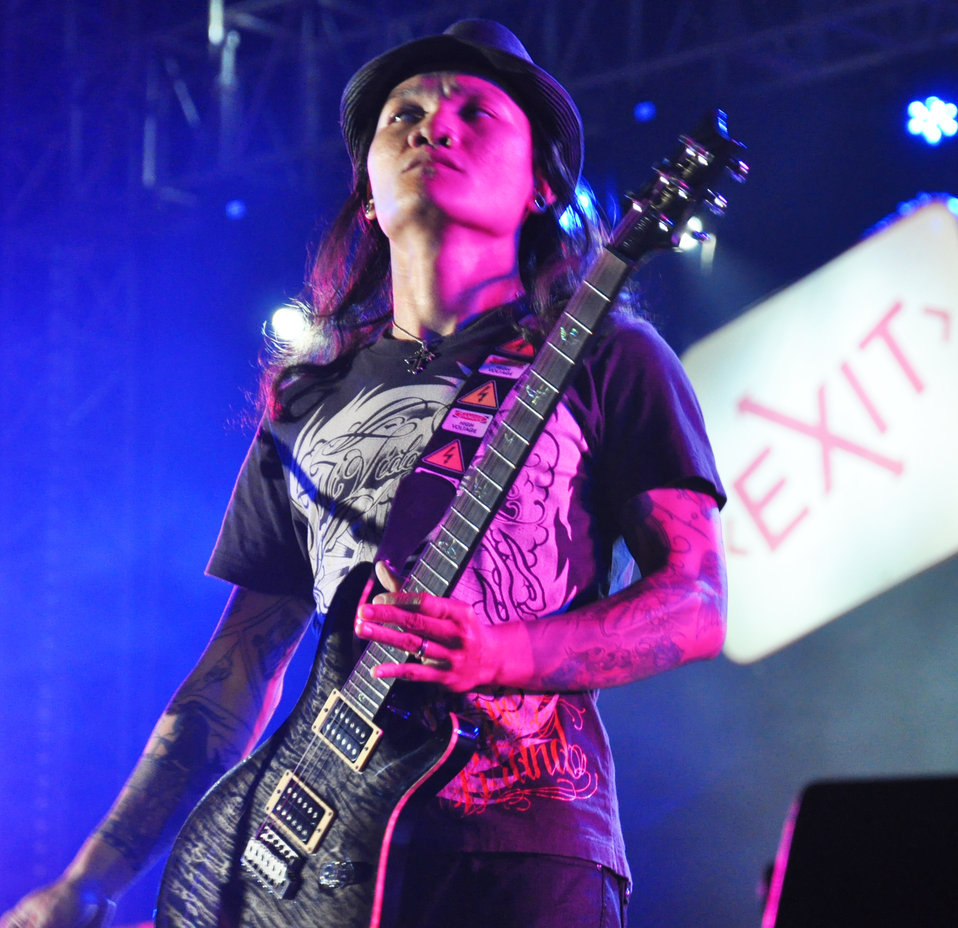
USAID MTV EXIT HCMC Concert

Concert in Ho Chi Minh City against human trafficking, April 17, 2010